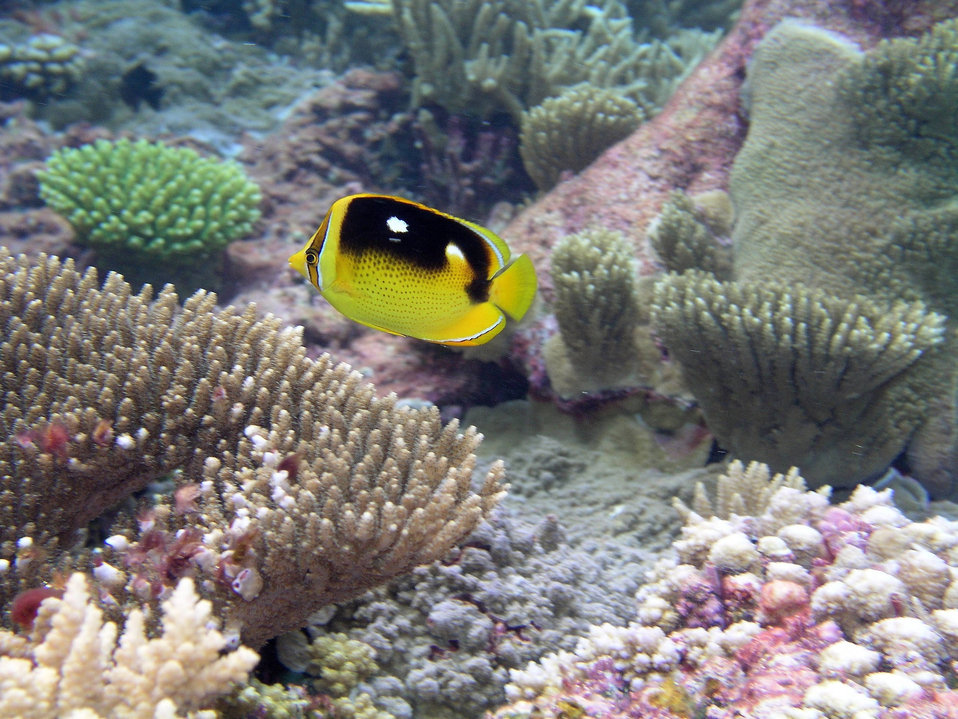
Butterfly fish at Palmyra Island National Wildlife Refuge

Photo credit: USFWS/Alex Wegmann

When sea temperature rises just a degree or more and stays that way for extended periods, the relationship between coral and algae begins to breakdown. The coral expel their algae, a process called bleaching